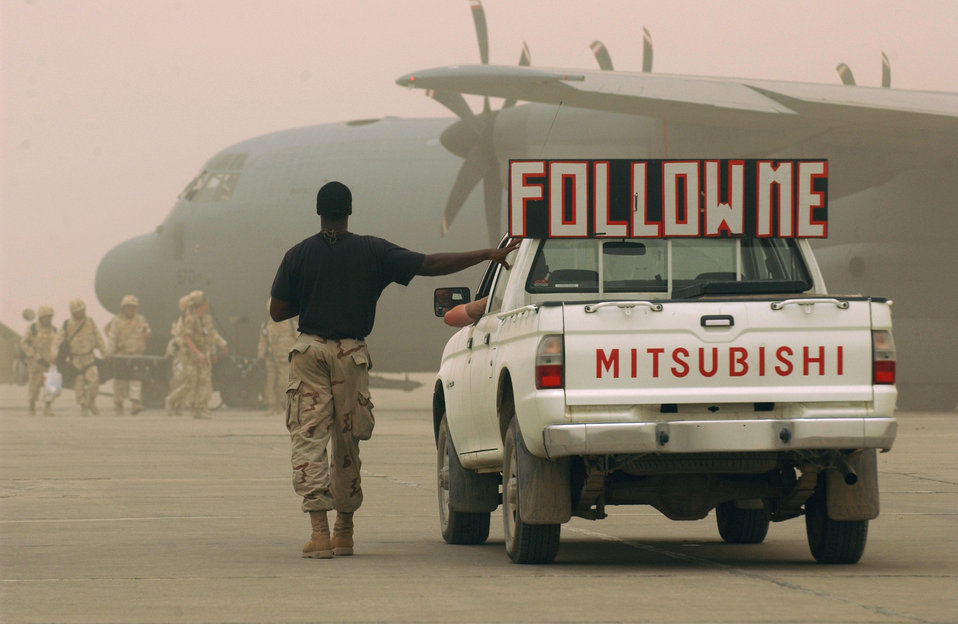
Follow them

BAGHDAD, Iraq -- Senior Airman Nathan Simmons (left) and Staff Sgt. Johnathan Baker watch British troops board a Royal Air Force C-130 Hercules after it successfully navigated through a dusty sky over central Iraq. The Airmen are crew chiefs with the 447th Aircraft Maintenance Squadron. Airman Simmons is deployed from McConnell Air Force Base, Kan. Sergeant Baker is a reservist from Charleston AFB, S.C.